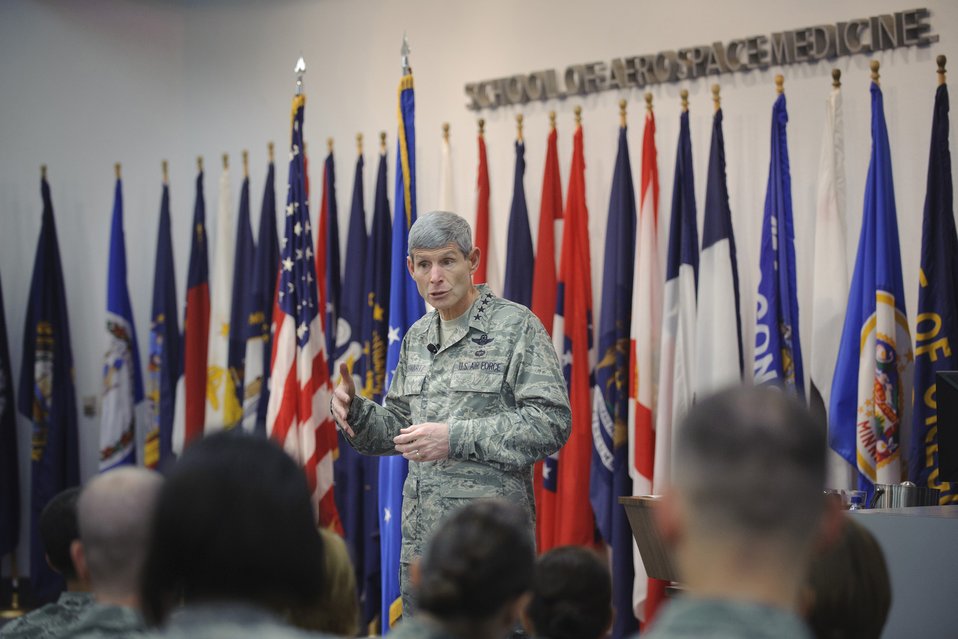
Air Force Chief of Staff visits USAFSAM

Air Force Chief of Staff Gen. Norton Schwartz praises faculty, staff and students of the U.S. Air Force School of Aerospace Medicine on their contributions to keeping military members fit, saving lives of wounded warriors and supporting their recovery. General Schwartz was visiting the school May 13, 2010, at Brooks City-Base in San Antonio.